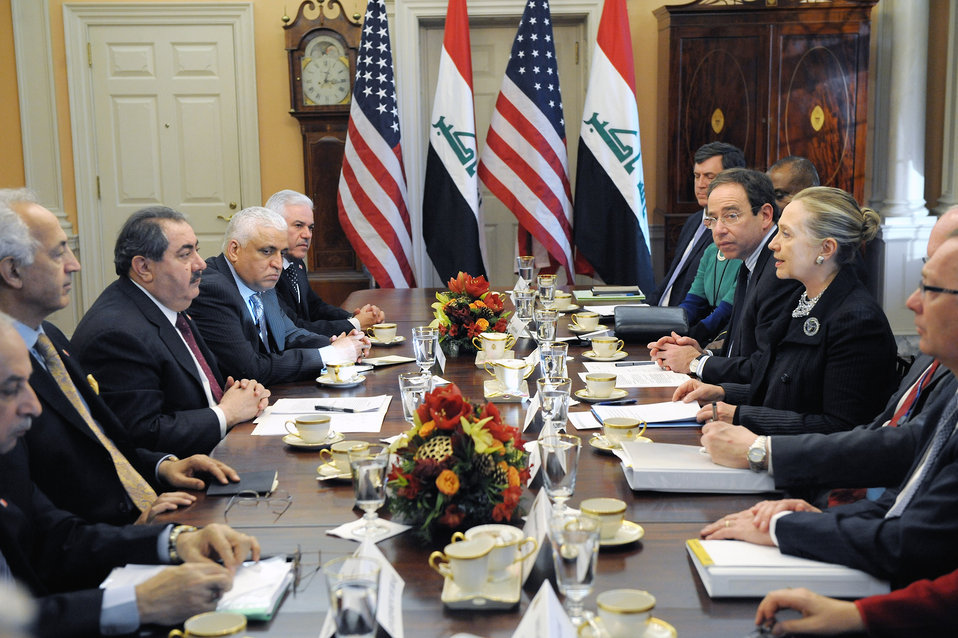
Secretary Clinton and Iraqi Foreign Minister Zebari Launch the Joint Coordination Committee

U.S. Secretary of State Hillary Rodham Clinton launches the Joint Coordination Committee (JCC) with Iraqi Foreign Minister Hoshyar Zebari, at the U.S. Department of State in Washington, D.C., on December 12, 2011. Deputy Secretary of State Thomas Nides is seated to the right of Secretary Clinton.